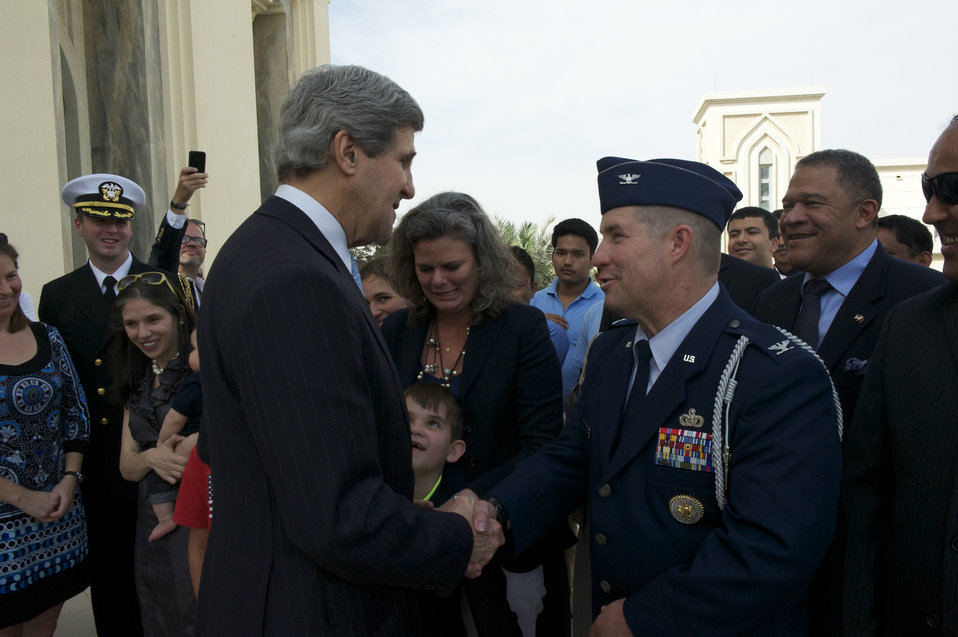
Secretary Kerry Shakes Hands With Defense Attaché Officer Weingartner

U.S. Secretary of State John Kerry shakes hands with Defense Attaché Officer Jim Weingartner at the U.S. Embassy in Doha, Qatar, on March 6, 2013.